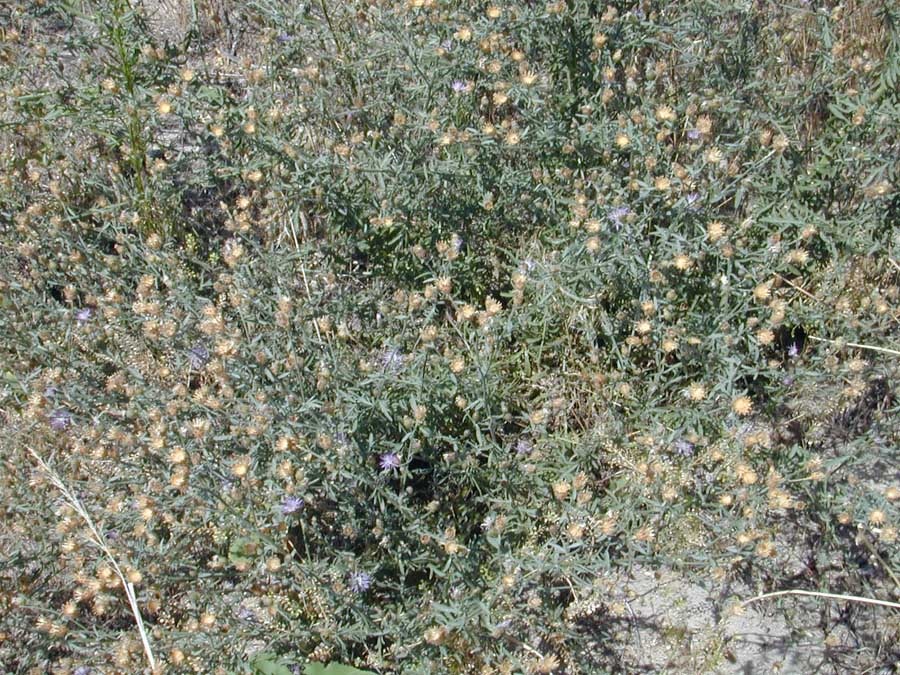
Unhealthy BLM Public Lands Idaho vegetation Plants in BLM